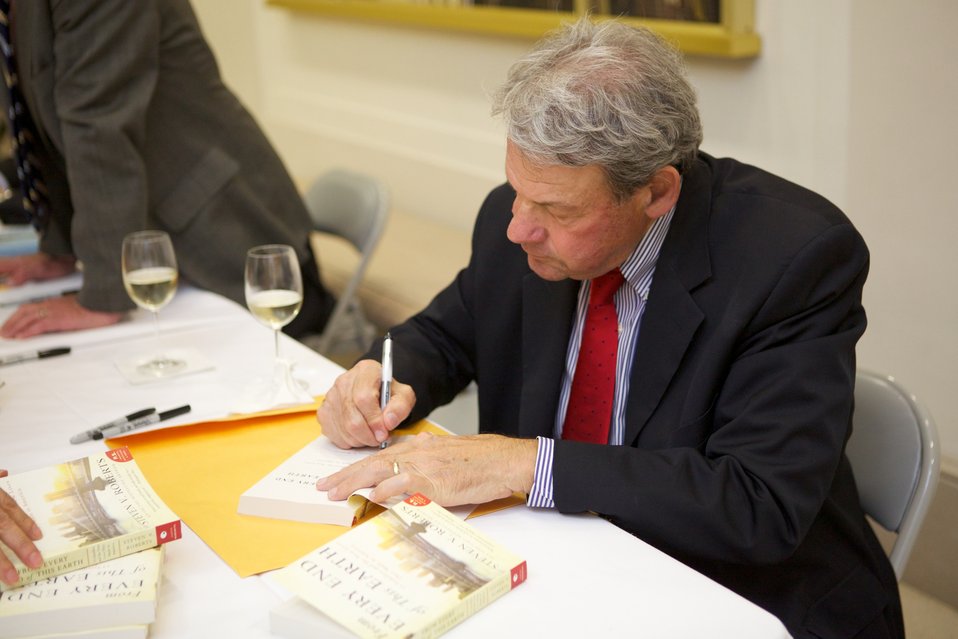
A Nation of Immigrants: How They Shaped America